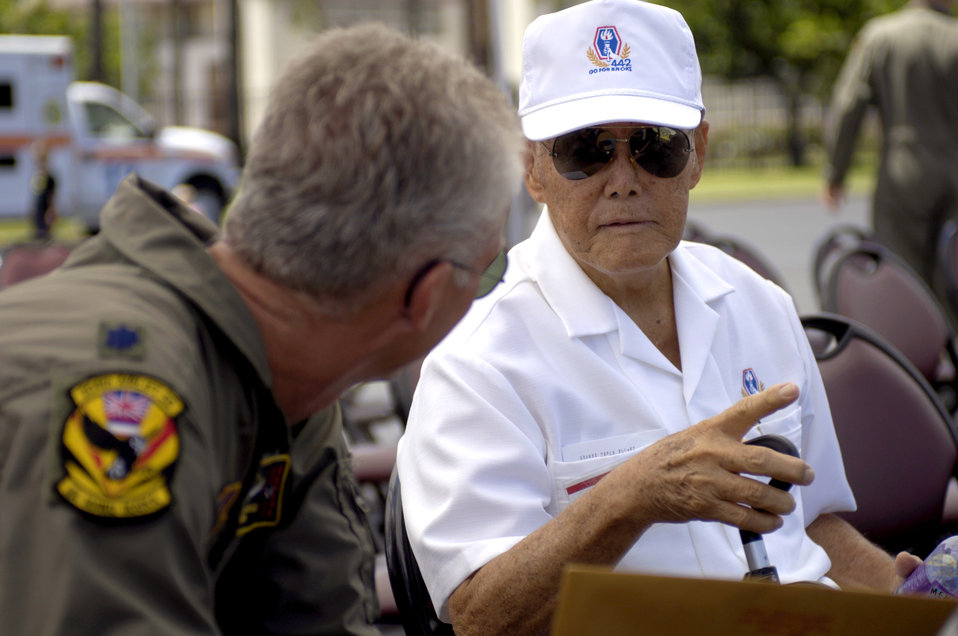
Hickam honors World War II vets with new C-17

Lt. Col. Gerry Mansell talks to Yoshikatsu Maruo after a C-17 Globemaster III arrival ceremony at Hickam Air Force Base, Hawaii, on Wednesday, June 14. Colonel Mansell is with the Hawaii Air National Guard's 204th Airlift Squadron. Mr. Maruo is a veteran from the 442nd Combat Regimental Team. The aircraft